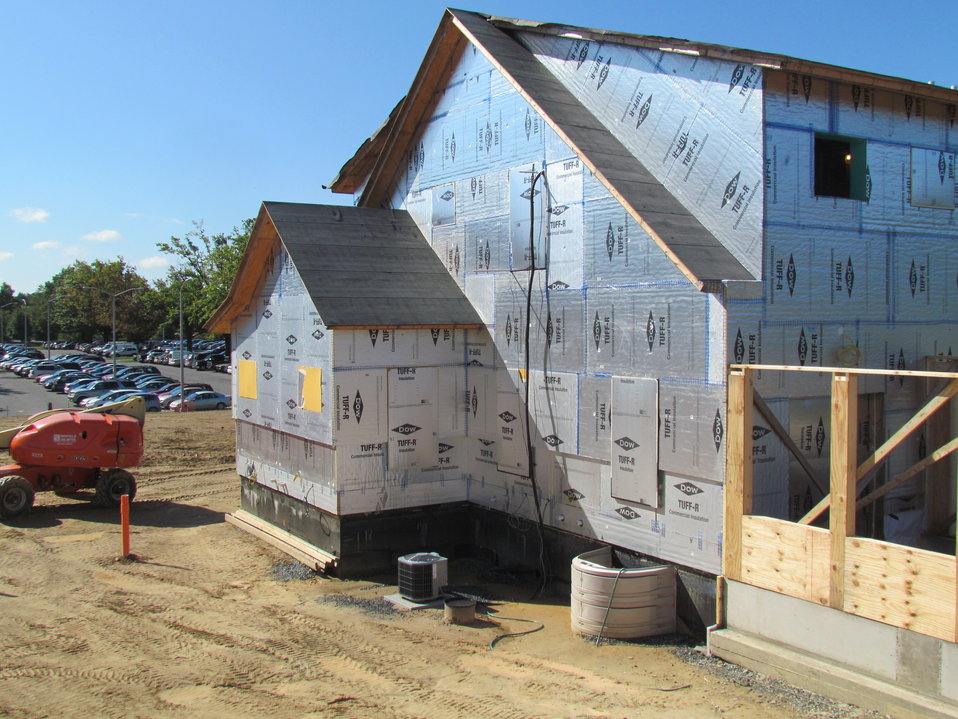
Net-Zero Energy Residential Test Facility - Photo showing northwest corner of facility.